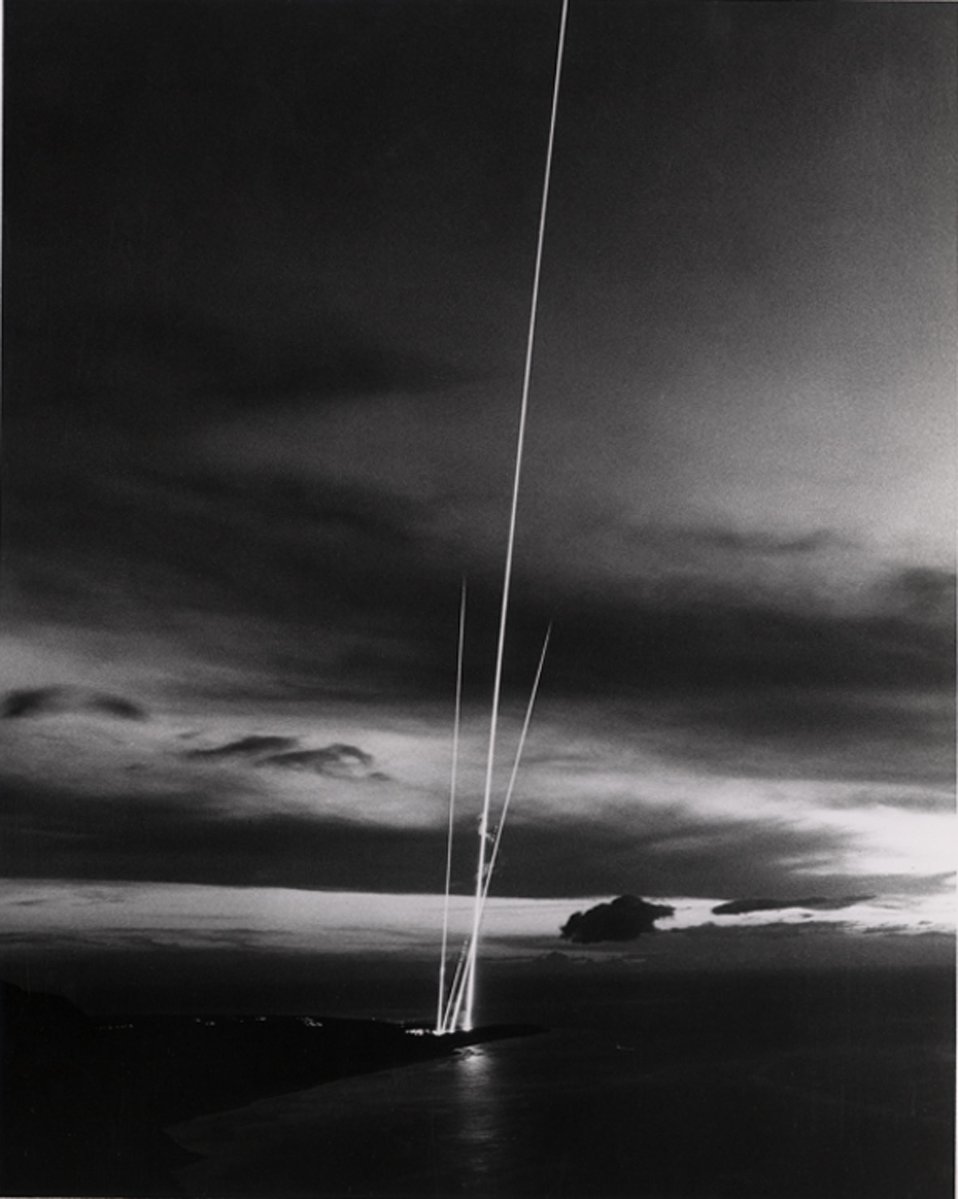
Fiery trails of four rockets launched as part of a series of high-altitude experiments investigating the earth's ionosphere.